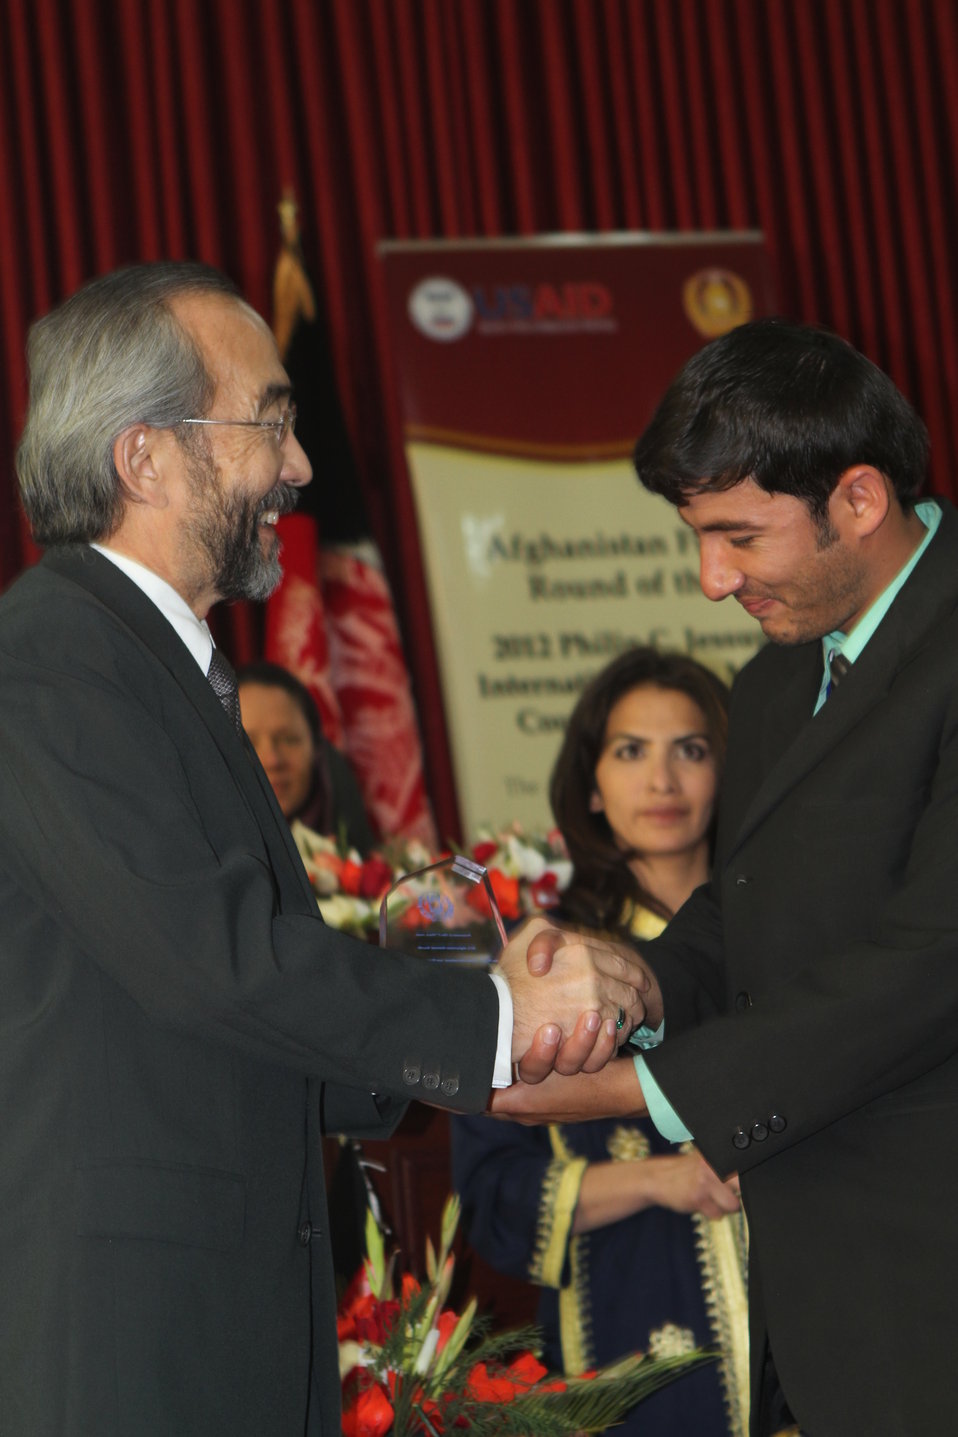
Best Memorial Trophy

Ken Yamashita, Mission Director, USAID, presents trophy to Al Biruni Unversity student